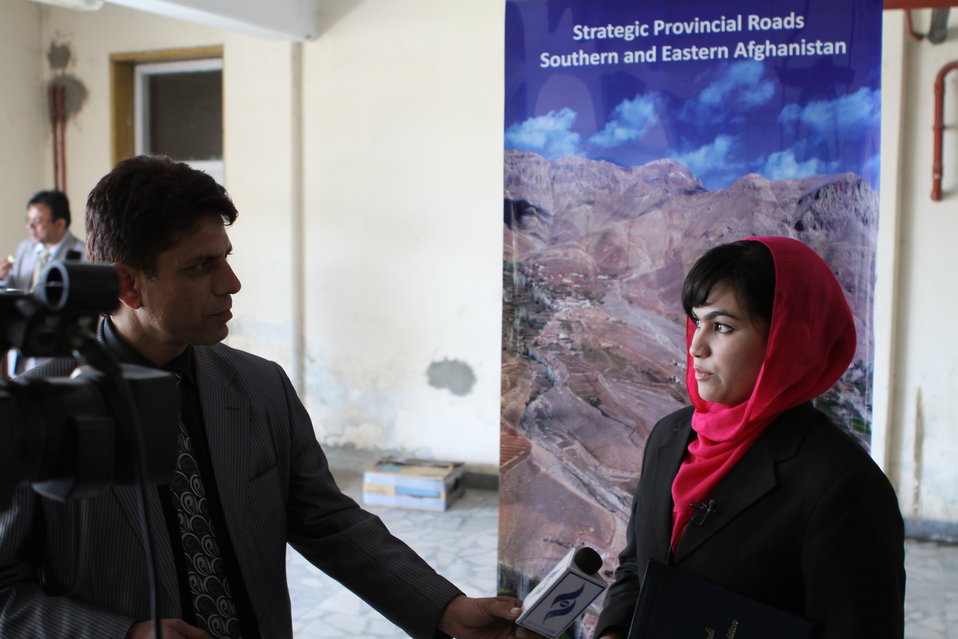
Female University Students Complete Internship

Kabul, Afghanistan | March 16, 2011 – In response to a demand for qualified Afghan engineers, Kabul University celebrated completion of an intensive five-month Mentor Protégé Training Program today by 10 female fourth year university students. The Training Program is a joint effort between the Government of the Islamic Republic of Afghanistan, the U.S. Agency for International Development (USAID), and the Universities of Kabul, Kandahar, Alberoony in Kapisa, Shiekh Zayed in Khost. The graduation ceremony highlighted collaboration with these national institutions in building the technical skills of young Afghans, made possible by USAID.

Four of the interns are engineers, while the remaining six are from the faculties of computer science, economics, and psychology.

Speaking about the event, H.E. Minister of Public Works Abdul Qudus Hamidi said, “The future of Afghanistan lies in developing the skills of our youth, and the engineering skills of these graduates today represent a small but important step forward for the country.”

Keynote speakers at the ceremony included H.E. Deputy Minister of Higher Education Abdul Rahim; USAID Senior Deputy Mission Director Robert Hellyer; and Chancellor of Kabul University Professor Hamidullah Amin. Approximately 150 people, including current and former students attended the graduation.

Launched last year, the Mentor Protégé Training Program has provided qualifying students the opportunity to intern with USAID’s Strategic Provincial Roads-South and East Afghanistan project and gain practical experience in a real work environment. The goal of the program was to offer interns the opportunity to gain hands-on experience to reinforce their formal studies. A total of 30 students from four national universities have benefitted from this program.

“The promotion of women’s rights is integrated into the overall U.S. Government development strategy and can be found in key programs, including education, healthcare, security, rule of law, political participation, agriculture, and economic development,” said Robert Hellyer. “The U.S. Government is committed to the Afghan leadership of programs that directly enhance development, particularly as it relates to women’s issues.”

This event also highlighted the learning achievements of students and emphasized the importance of hands-on internship programs. The curriculum is designed to instill students with the knowledge and confidence to qualify for engineering positions upon completion of their fourth year at their respective universities.